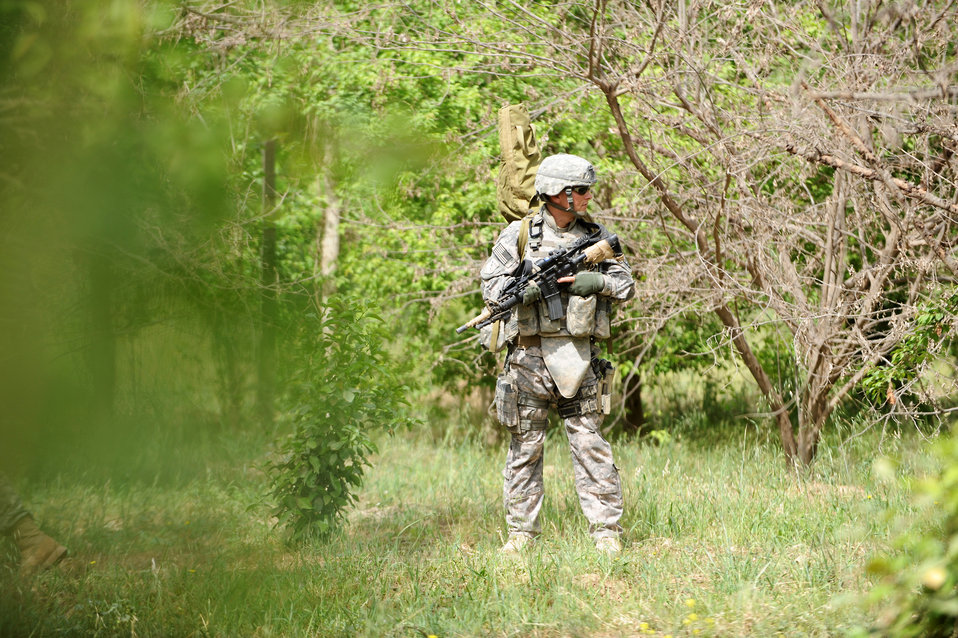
Joint Base Balad security forces Airmen patrol Iraq villages

Senior Airman Brian Hafner conducts security during a patrol near Bakr Village April 9 in support of Operation Iraqi Freedom. He is assigned to the 532nd Security Forces Squadron at Joint Base Balad, Iraq.